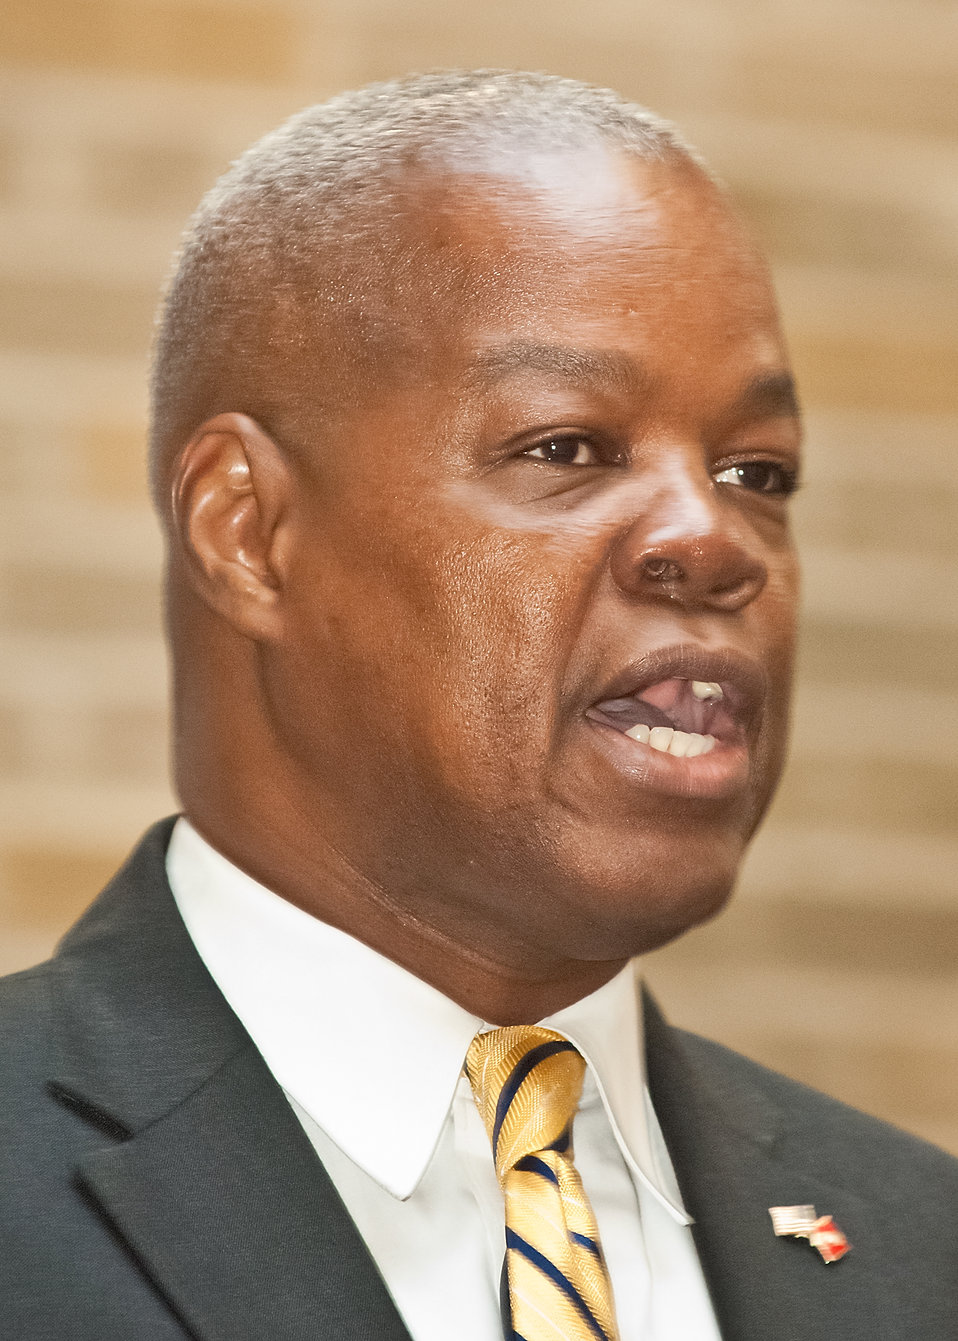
Deputy, Chief Information Officer Charles McClam welcomes employees and exhibitors to the U. S. Department of Agriculture (USDA) Section 508 and Disability Awareness Program at USDA in Washington, DC, on Monday, Oct. 31, 2011. Sponsored by the Office of the Chief Information Officer, the theme of the event was, “Turning the Key to Unlock and Eliminate Barriers by Providing Accessibility to All.” Section 508 applies to the development, procurement, maintenance or use of electronic and information technology allowing accessibility and awareness to promote inclusiveness to employees and the public with disabilities to information technology managed by the Federal government. Section 508 is part of the USDA’s Cultural Transformation Initiative to hire more employees with disabilities.